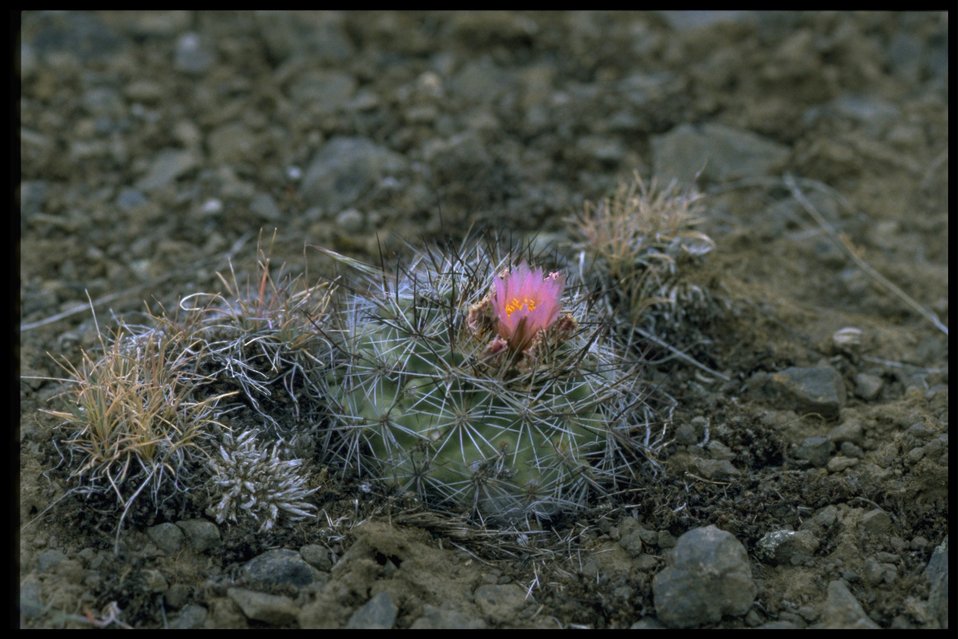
Medium shot of Simpson hedgehog cactus (Pediocactus simpsonii var. robustior).